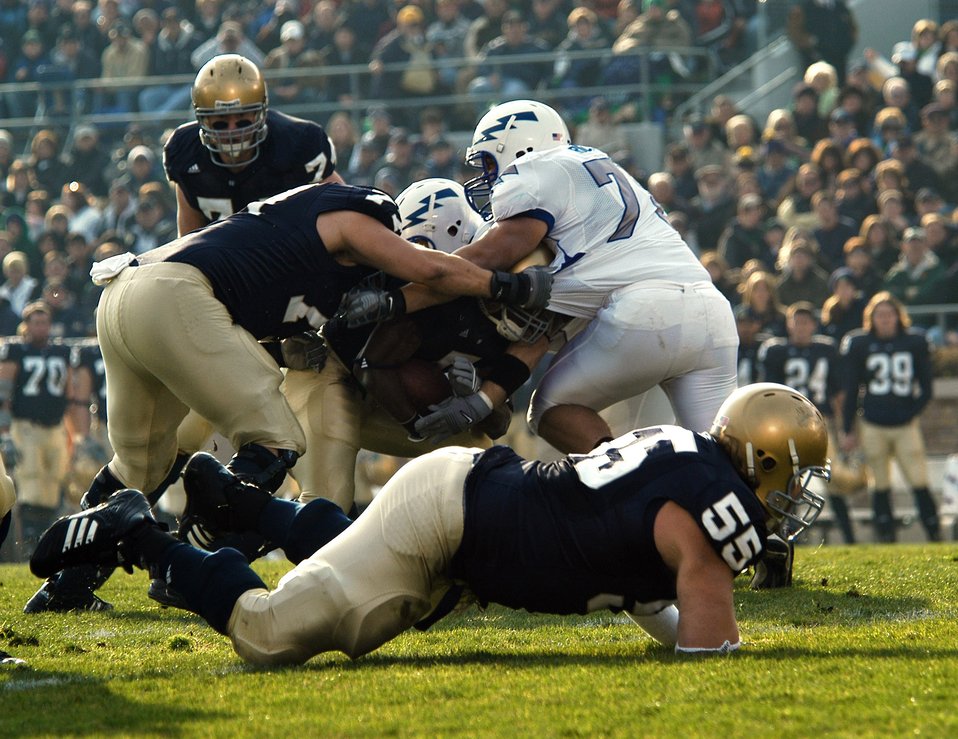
Football: Falcons outfight Irish, 41-24

U.S. Air Force Academy Falcon nose guard Stephen Larsen has his jersey grabbed by Fighting Irish offensive lineman Michael Turkovich as Larsen and company swarm around an Irish running back during Air Force's 41-24 win Nov. 10 at Notre Dame Stadium in Indiana.